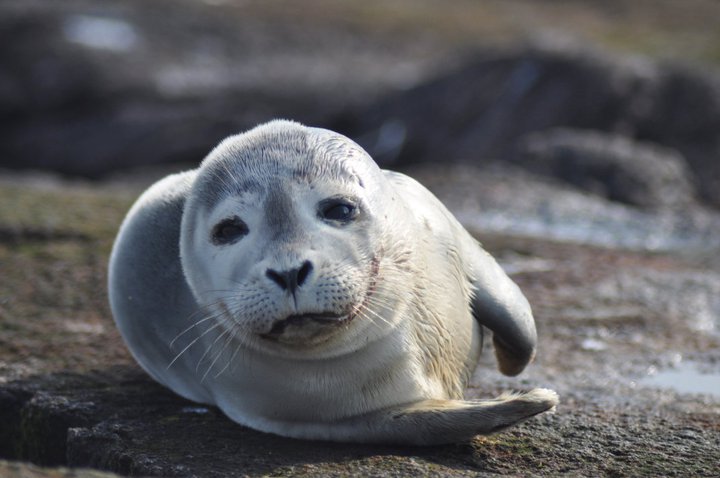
Close-up of a harbor seal

A harbor seal at Nantucket National Wildlife Refuge, MA.